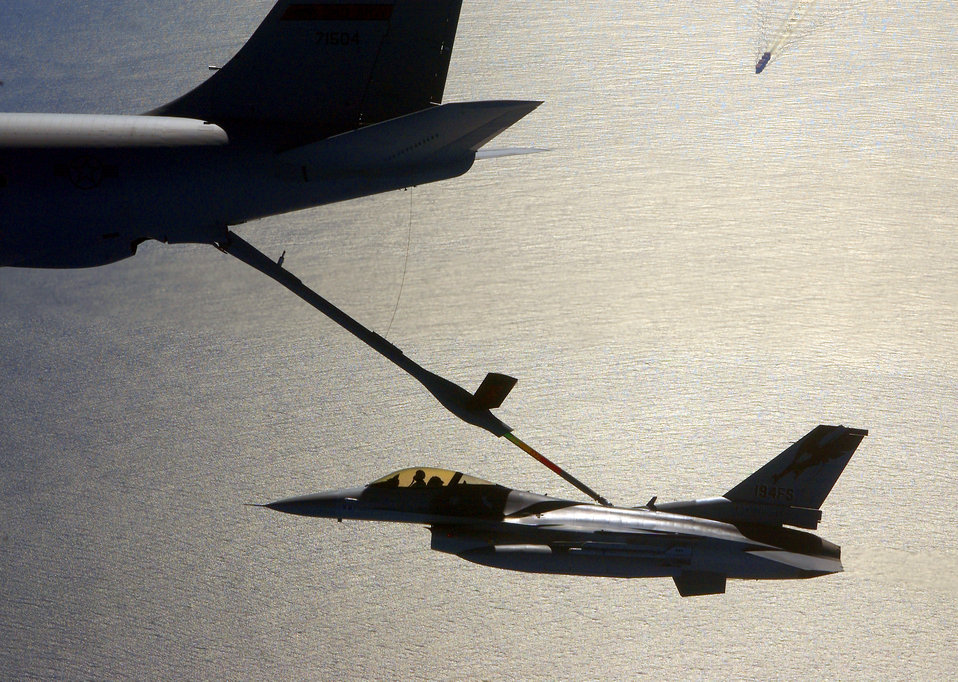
Noble Eagle

OVER THE SAN FRANCISCO BAY AREA -- Major Rob Swertfager gets his F-16 Fighting Falcon refuled by a KC-135E Stratotanker during a Operation Noble Eagle training patrol March 16. Major Swertgager is a pilot with the California Air National Guard's 144th Fighter Wing in Fresno. The KC-135E is assigned to the 940th Aerial Refueling Wing at Beale Air Force Base, Calif.